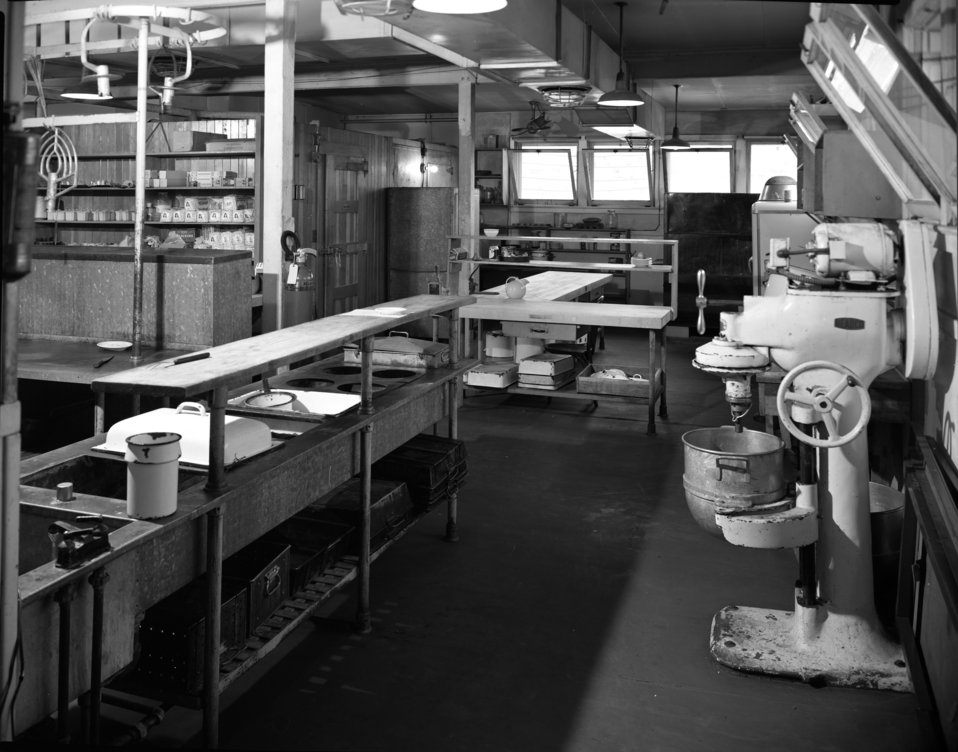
Grove Hall Interior Oak Ridge 1948

DOE photo Ed Westcott 5-24-1948 Oak Ridge Tennessee